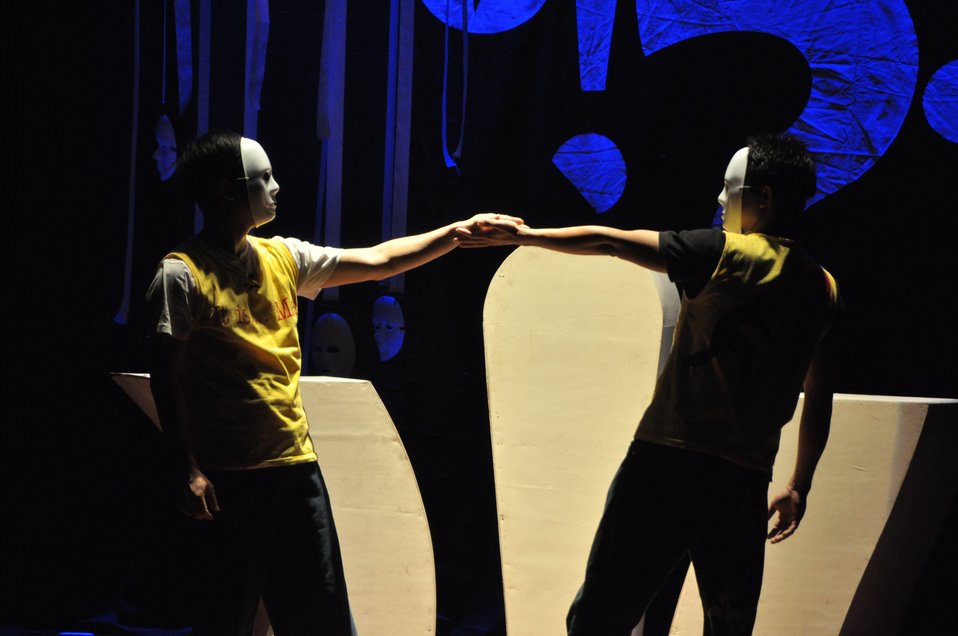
PEPFAR Musical Questions and Exclamations

Hanoi, May 17, 2013